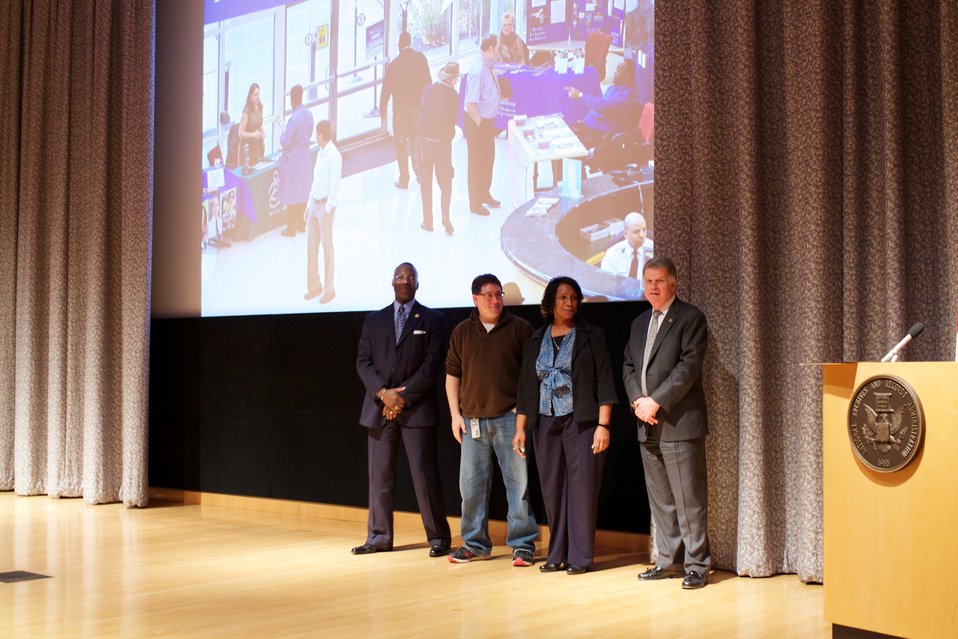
CFC Recognition Event